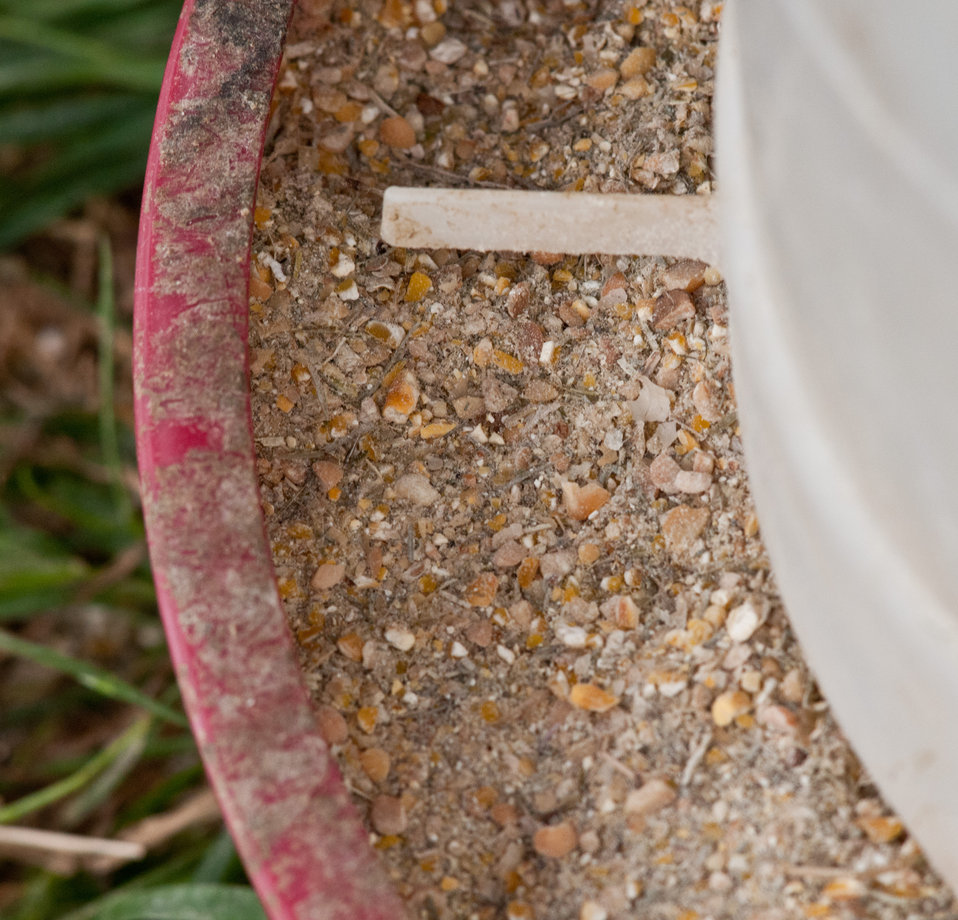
Organic feeds supplement the diet of layer and broiler chickens at Nick’s Organic Farm, in Adamstown, MD, on Friday, July 12, 2013. The farm, owned by Nick Maravell, produces Black Angus beef, chicken, turkey, eggs, hay, soybeans, corn, alfalfa, orchard grass, rye; and other crops. The cattle are100% grass-fed receiving certified organic pasture, certified organic hay (in winter), water and mineral salts mixed with sea kelp. The cattle are not fed hormones, antibiotics or animal products. Poultry feed from grain is ground from organic grain. The poultry also graze on organic pastures. The farm has conducted on-farm research with federal, state and non-profit agencies to refine organic practices. An organization such as the U.S. Department of Agriculture (USDA) Agricultural Research Service (ARS) center in Beltsville has been able to conduct research to improve organic crops and to breed and manage the cattle so that they have.